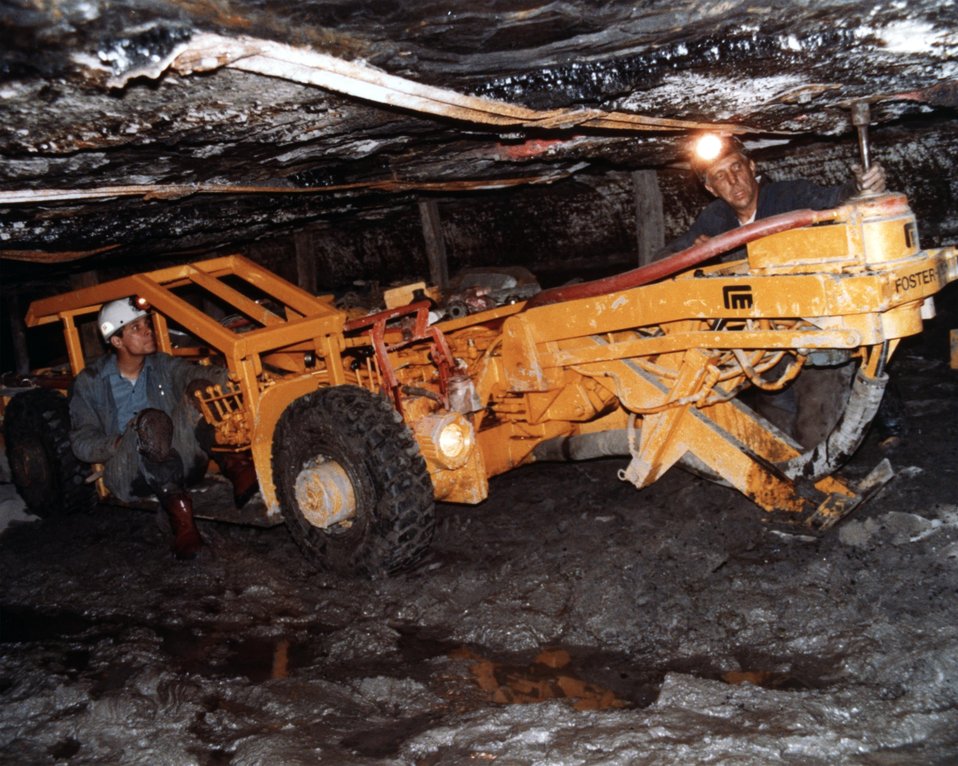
FRONT/SIDE VIEW OF FLEXIBLE ROOF DRILL IN OPERATION UNDERGROUND

THE PREDOMINANT UNDERGROUND MINING METHOD IN THE U.S. IS THE 'ROOM AND PILLAR' METHOD, A TERM DERIVED FROM THE MINING PATTERN OF A SERIES OF EXCAVATED AREAS (ROOMS) AND UNEX- CAVATED AREAS (PILLARS) WHICH ARE LEFT TO SUPPORT THE ROOF. A MAJOR INCREASE IN PRODUCTION AND EFFICIENCY COULD BE ACHIEVED BY INTEGRATING THE ROOF SUPPORT AND EXTRACTION FUNCTION.